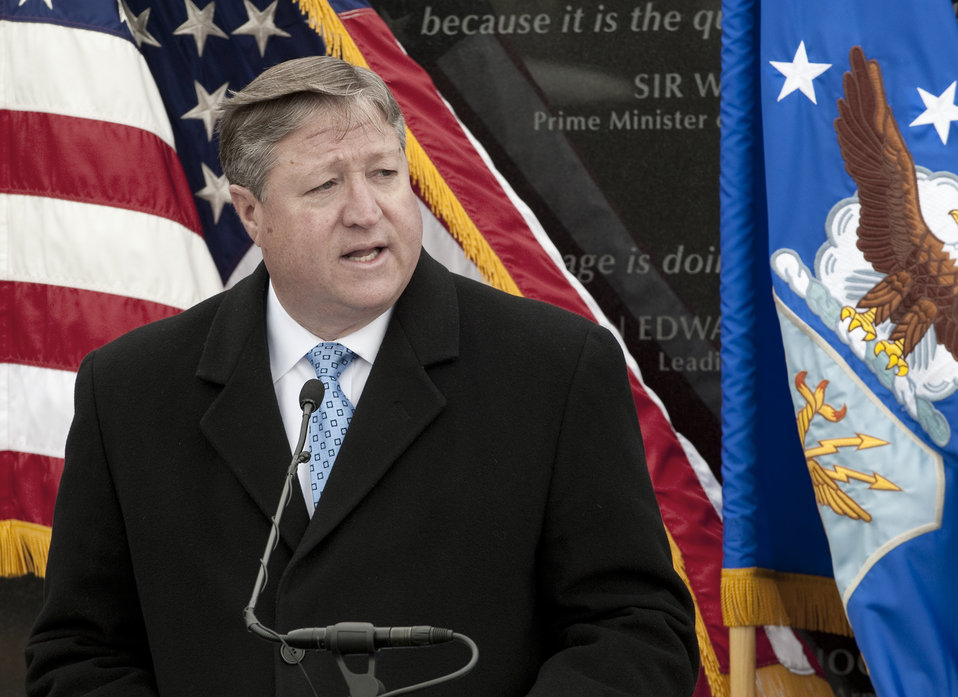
CMSgt Etchberger unveiling ceremony

Secretary of the Air Force Michael Donley provides remarks during a ceremony March 11, 2011, to unveil Medal of Honor recipient Chief Master Sgt. Richard L. Etchberger's name which was added to the Air Force Memorial in Arlington, Va.